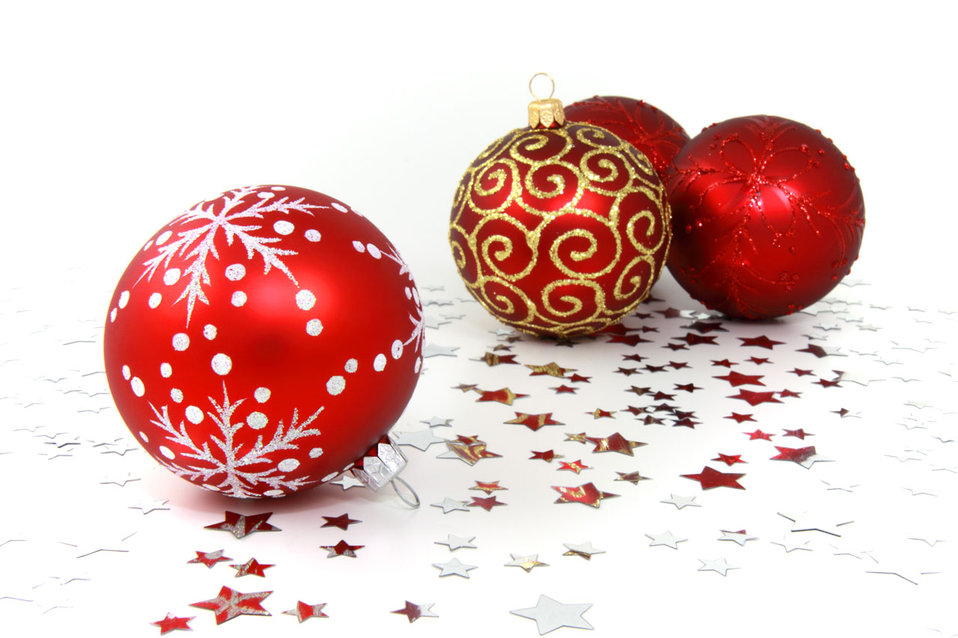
Red baubles

Four red christmas baubles with silver stars on white background.